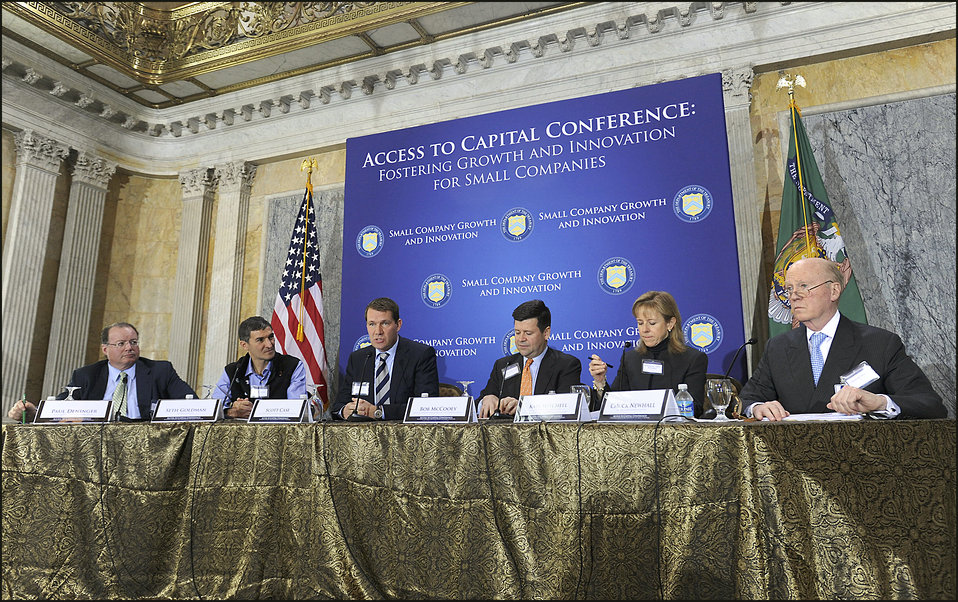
Access to Capital Conference

The second panel of the day was moderated by Scott Case, CEO of Startup America Partnership and Co-founder of Priceline, and focused on 'IPOs and Alternative Liquidity Platforms: Capital Market Access for Small Businesses.' Paul Deninger, Senior Managing Director at Evercore Partners; Seth Goldman, Founder of Honest Tea; Bob McCooey, Senior Vice President of New Listings and Capital Markets at NASDAQ; Kate Mitchell, Managing Director at Scale Venture Partners and Chairman of the National Venture Capital Association; and Chuck Newhall, Co-founder of New Enterprise Associates, were panelists.